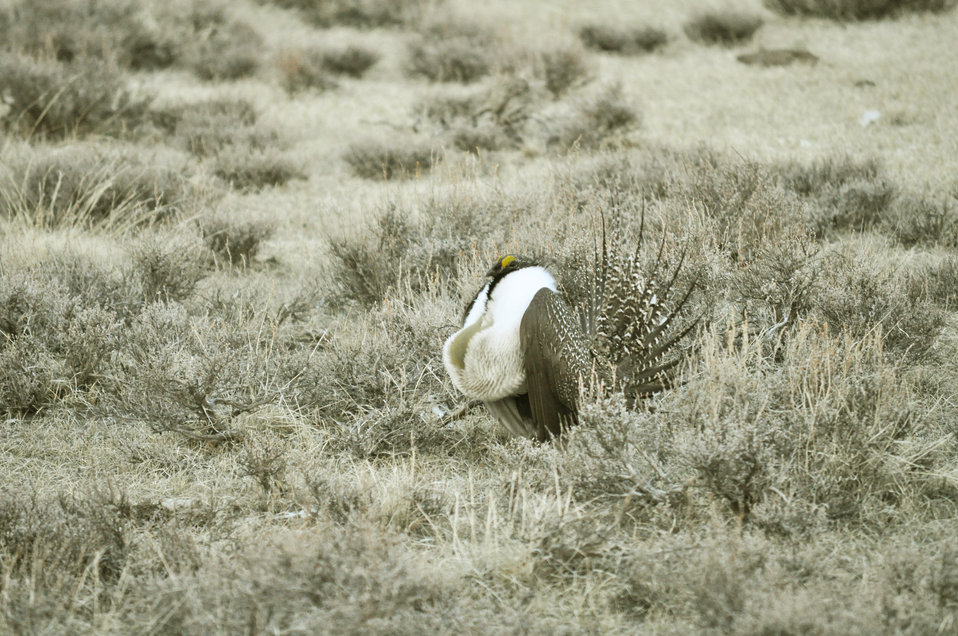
Male greater sage-grouse struts at lek (dancing or mating grounds) to attract females near Bodie, California.